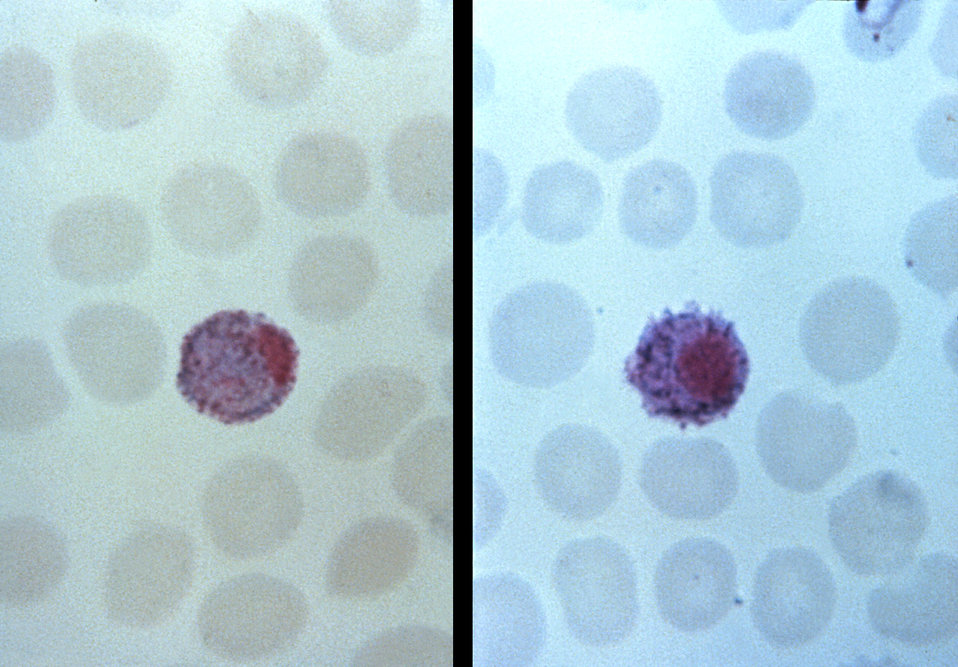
This thin film Giemsa stained micrograph depicts a Plasmodium ovale micro- (Lt) and macrogametocyte (Rt).